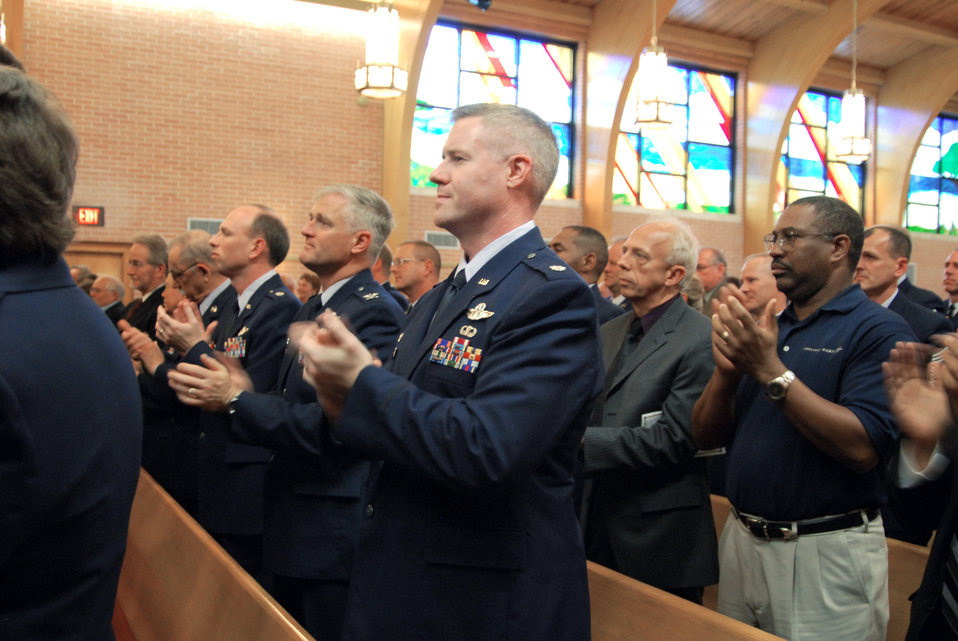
Airey memorial service celebrates life of AF hero

Those in attendance at the March 16 memorial service for the first Chief Master Sgt. of the Air Force, Paul W. Airey, clap loudly, rejoicing the life of the Air Force legend. This was in response to a request by the eighth Chief Master Sgt. of the Air Force, Sam Parish, who said though those present were there to mourn, they should also celebrate the life of Paul W. Airey with